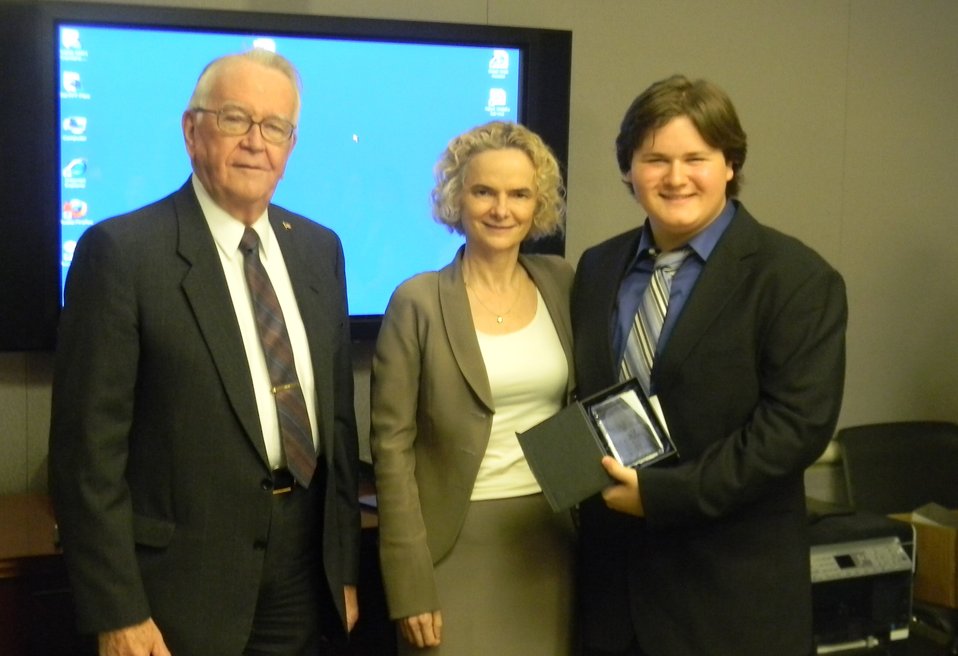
Friends of NIDA Dr. William Dewey, NIDA Director Dr. Nora Volkow and 2nd Place Winner Benjamin Edward Solder